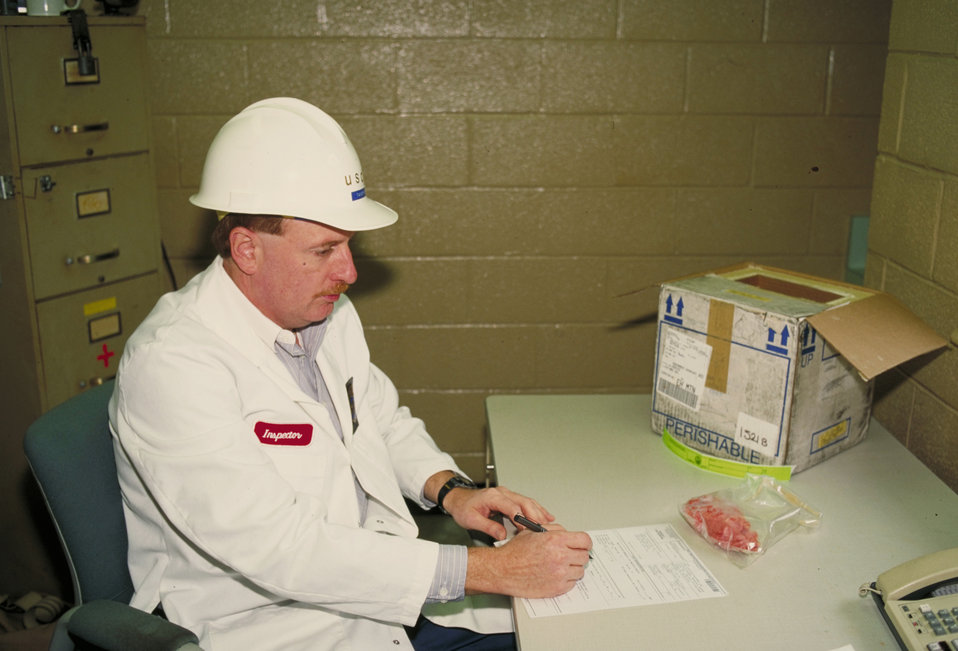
U.S. Department of Agriculture (USDA) Food Safety Inspection Service (FSIS) inspector prepares paperwork and meat samples to ship for microbiological analysis to verify the adequacy of the Hazard Analysis and Critical Control Points (HACCP) issued by FSIS on June 15, 1995. USDA photo Lester Shepherd.